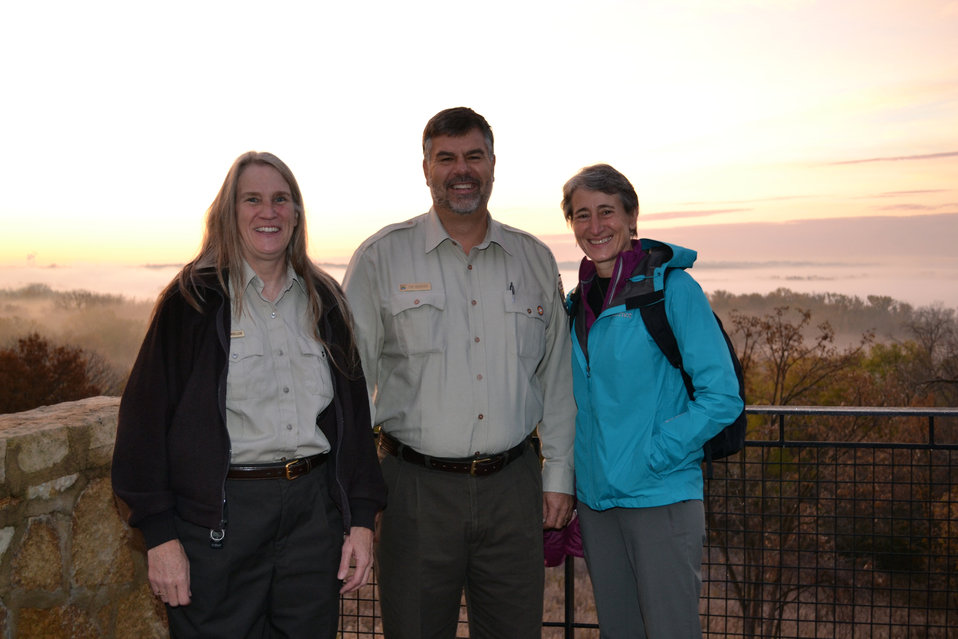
J.Holler T.Bodeen SOI

Refuge Manager Tim Bodeen and Deputy Refuge Manager Jeanne Holler take in the sunrise with Secretary Sally Jewell at Minnesota Valley National Wildlife Refuge.